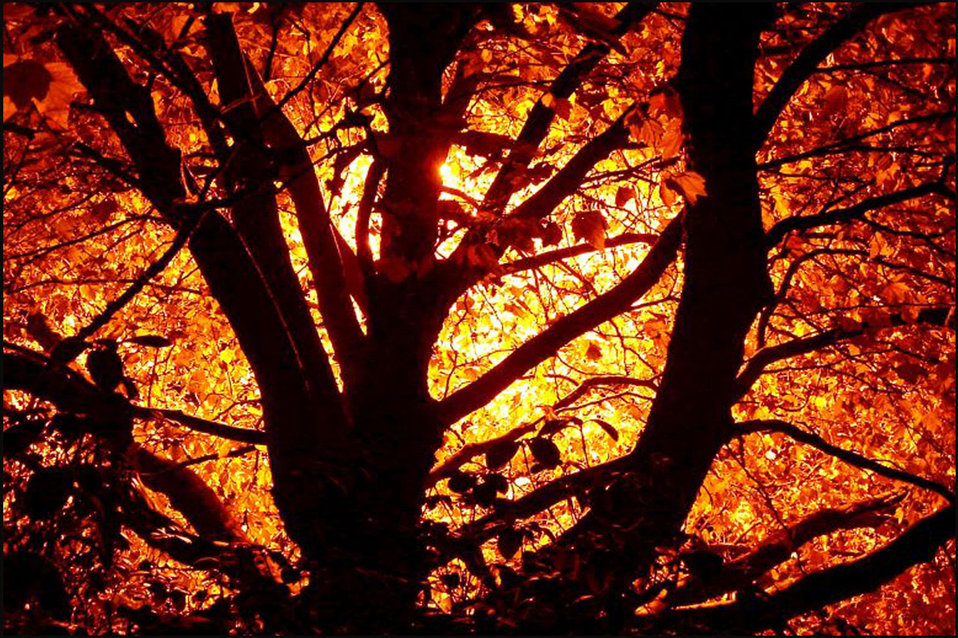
Autumn fire

A shot of the tree in my front yard with the sun setting behind it..